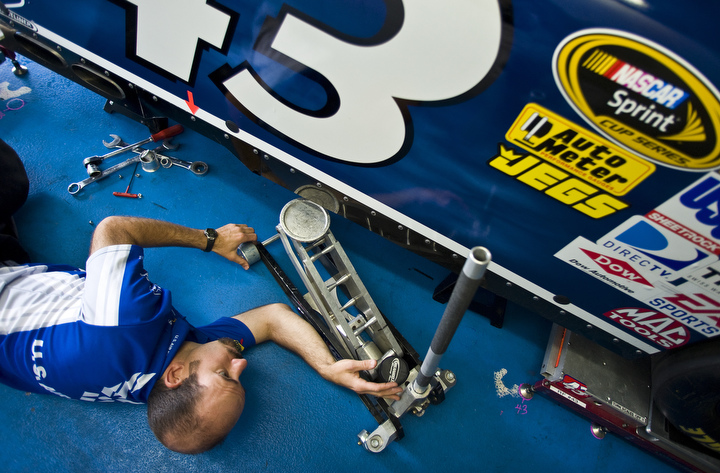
Coca-Cola 600

Alan Mincey, mechanic for the for the Richard Petty Motorsports #43 Air Force Dodge Charger prepares the car May 23 for Coca-Cola 600 NASCAR race at Lowe's Motor Speedway, Charlotte, N.C.